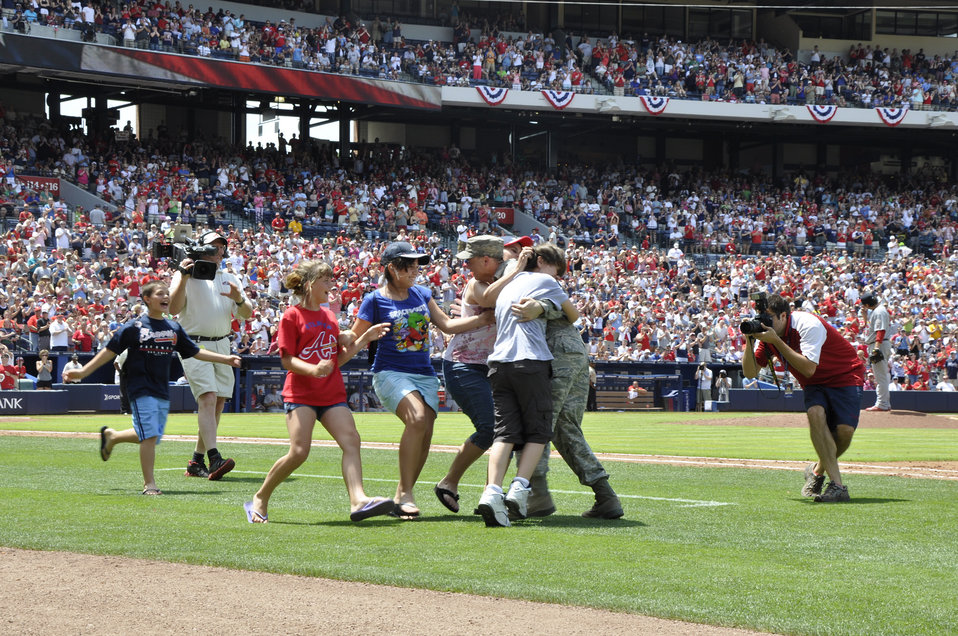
Airman has 'Memorial' reunion during Braves game

Master Sgt. David Sims and his family embrace during a surprise homecoming May 28, 2012, at Turner Field in Atlanta. Sims’ family attended the Atlanta Braves game and was called onto the field at the top of the fifth inning for a special video tribute from Sims, who they thought was still in Afghanistan. Sims is assigned to Headquarters Air Force Reserve Command's Communications Directorate at Robins Air Force Base, Ga.